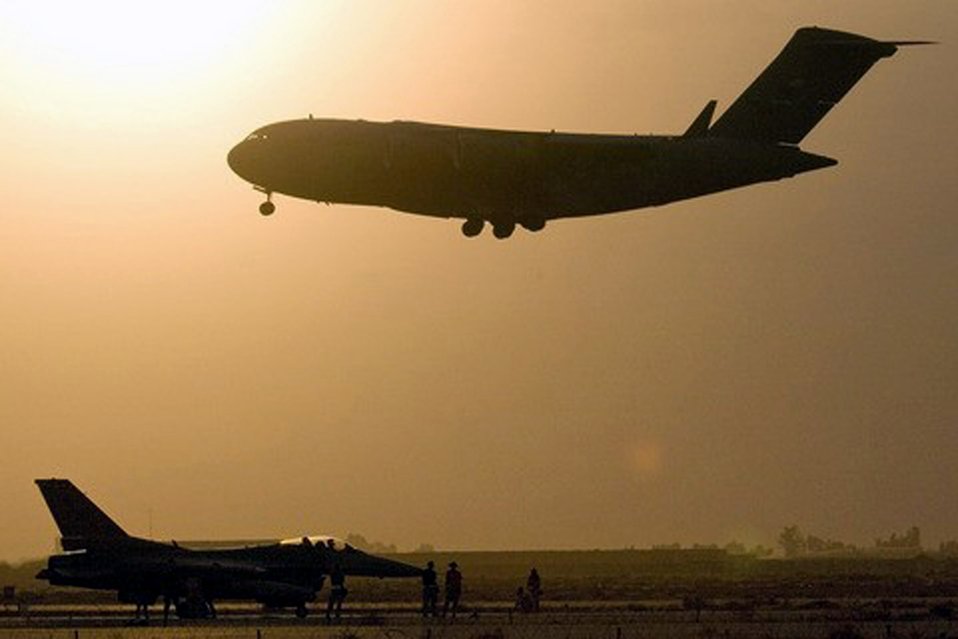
June 28 airpower summary: C-17s sustain operations

A C-17 Globemaster III takes to the air as an Air Force F-16 Fighting Falcon sits on the flightline at a base in Southwest Asia. Both aircraft contribute to air power in the area of responsibility. C-17s completed 48 sorties June 28 delivering cargo and passengers all over the area of responsibility. F-16s provided close-air support in and around Iraq supporting Operation Iraqi Freedom.